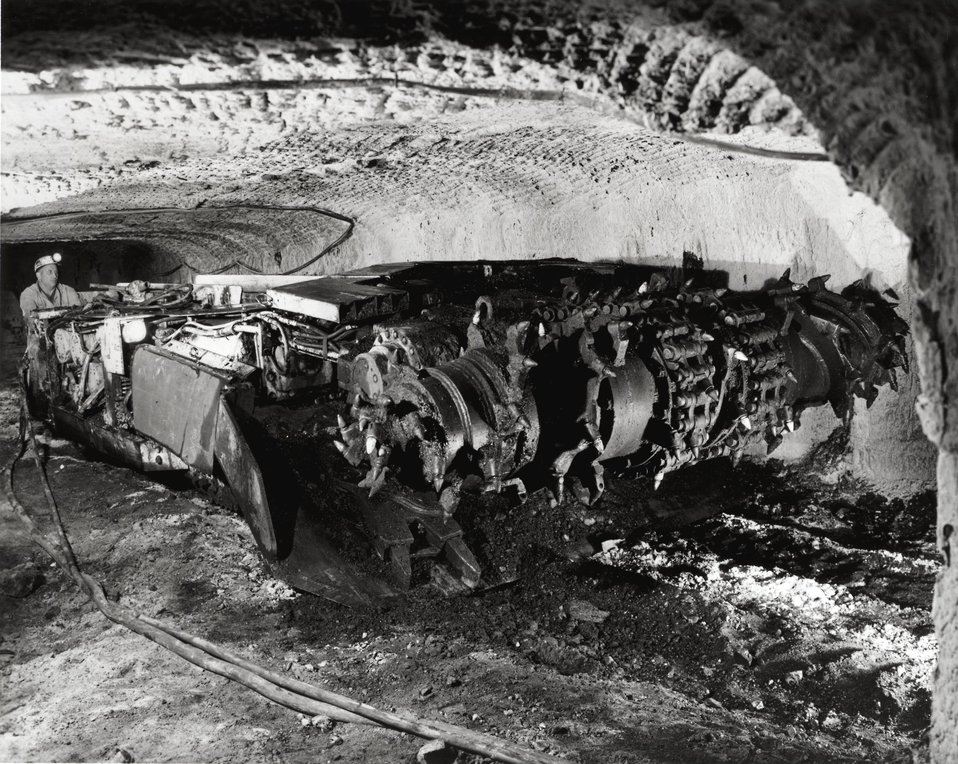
A modern continuous mining machine moves to a new working place in an underground mine. c. 1970